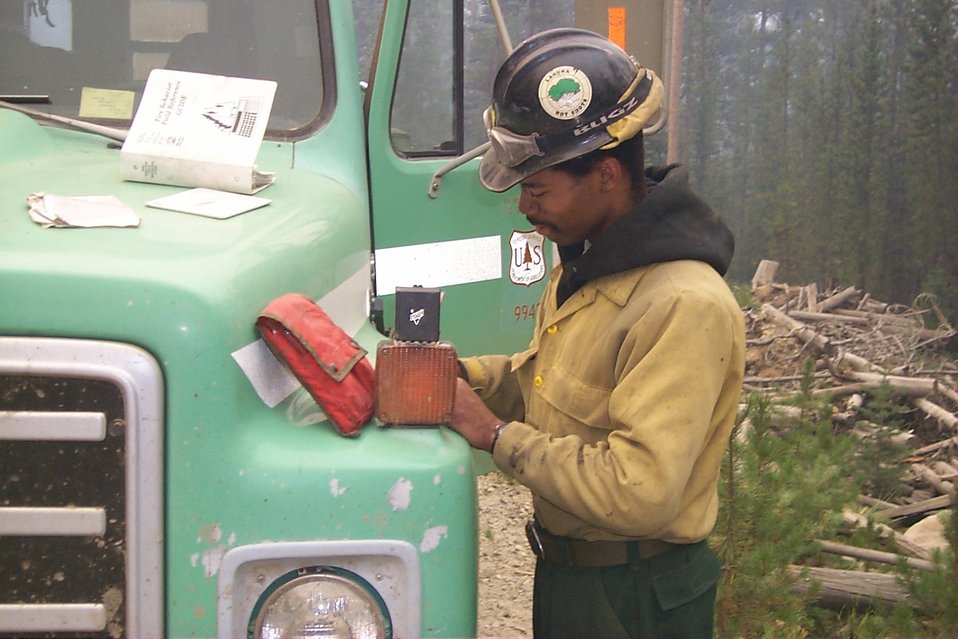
Recording weather information Fire Clearwater Fire Salmon Field Office USRD Upper Snake River District